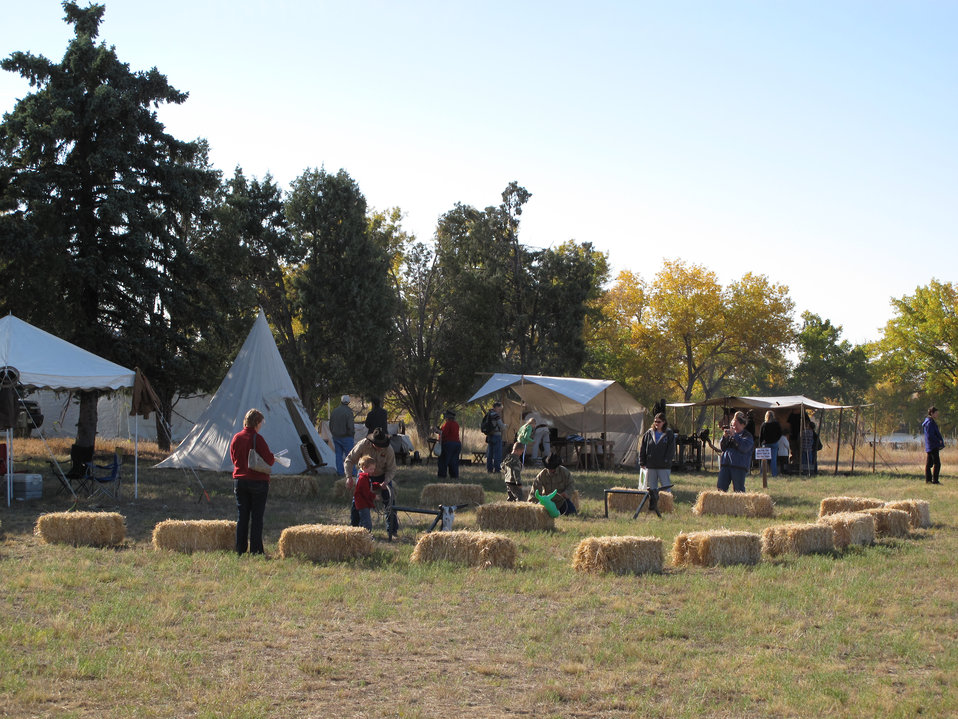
Refuge Round-up 2010

A section of the field was dedicated to the olden days. There were cowboys showing you how to lasso a cow, medal workers and colonial women showing you the way they used to do things. There was also hatchet tossing and a teepee to sit in!